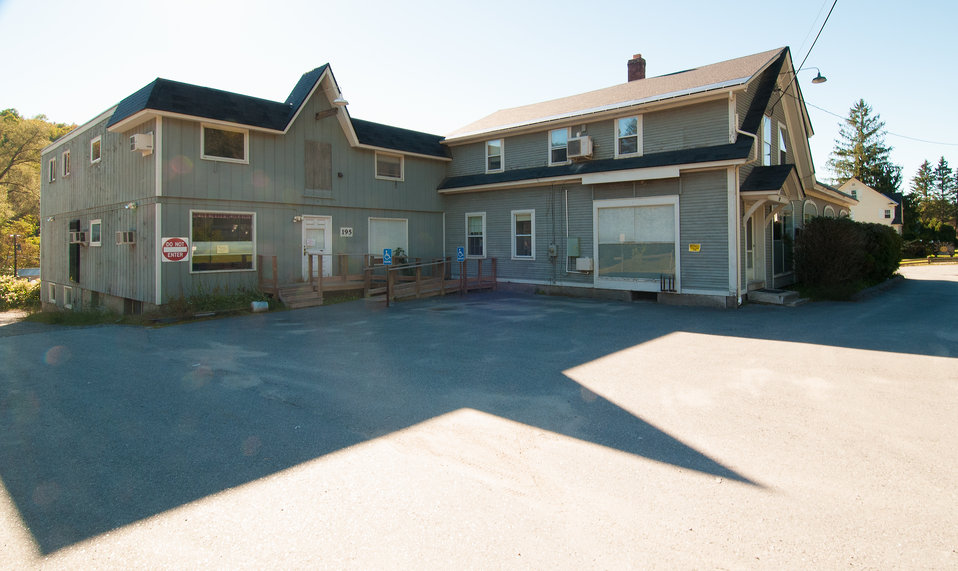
Through the assistance of a U.S. Department of Agriculture (USDA) Rural Development (RD) Community Facilities Grant the Central Vermont Community Action Council whose mission is to create economic security for low to moderate income residents in rural Central Vermont consolidated many of its programs and more than half of its employees into one campus in downtown Barre, VT on Sep. 17, 2013.